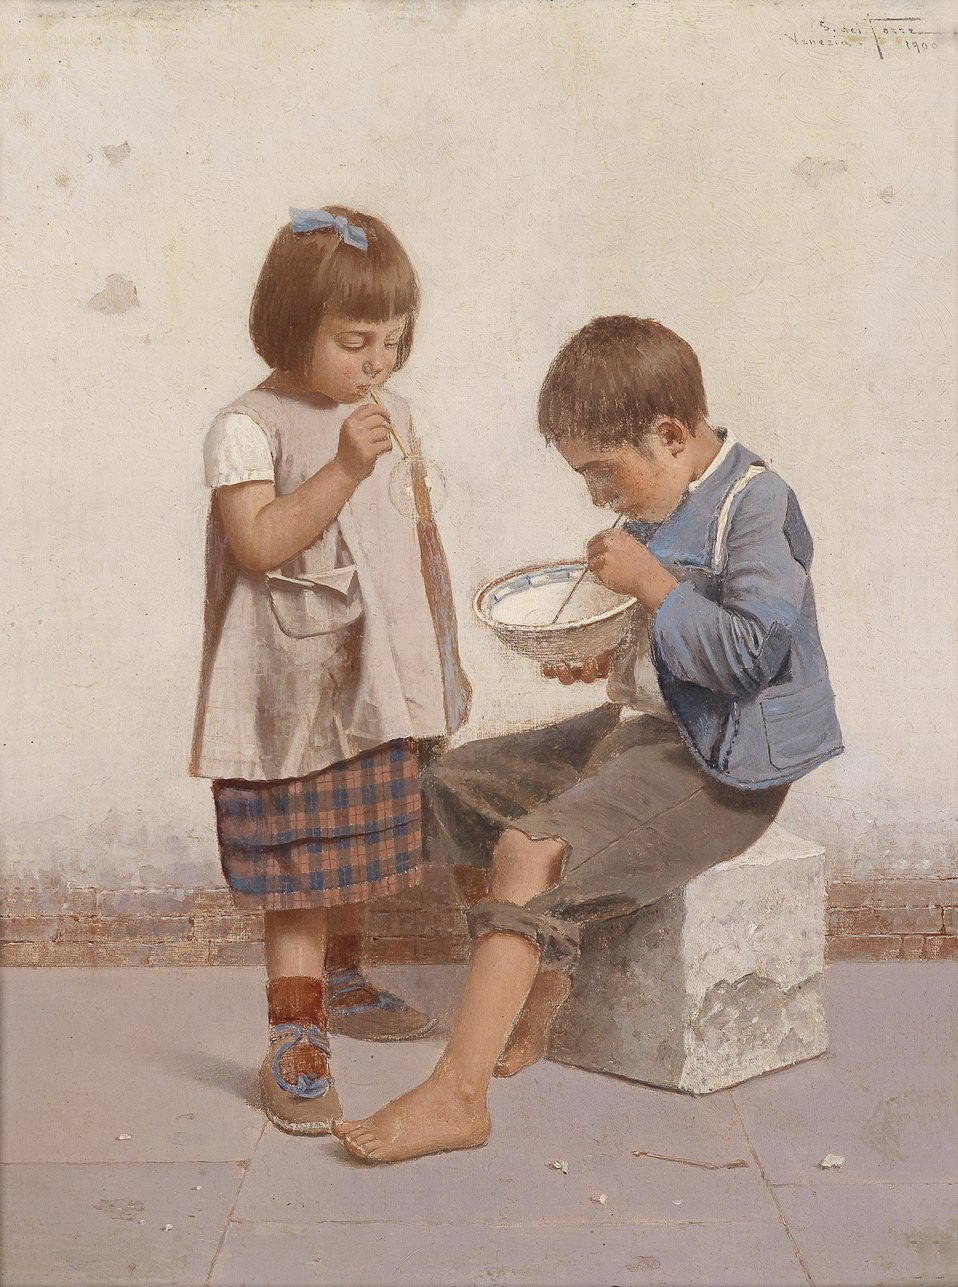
Deutsch: Seifenblasen, rückseitig alt betitelt, signiert, datiert G. del Torre, Venezia 1900, Öl auf Holz, 24 x 18 cm